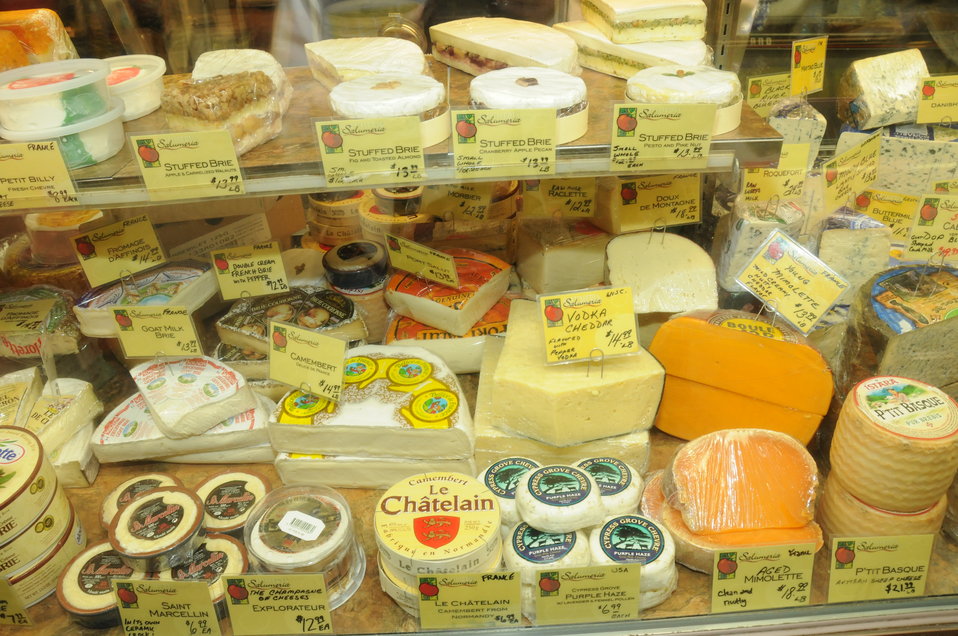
The Reading Terminal Market offers produce fresh from the field to the people of Philadelphia, PA on April 3, 2009. There are Amish specialties, fruits, vegetables, meats, seafood, and poultry. Reading Terminal Market opened for business in 1892 with approximately 78,000 square feet and almost 800 spaces for vendors. The Market was revitalized in the 1990’s and today is still the gastronomic bazaar that its original planners had envisioned. Many of the historic Market stands survived the reconstruction and are once again filled with local produce, fresh eggs, milk, meats, poultry, seafood, handmade crafts, jewelry, and clothing. The Market is home to more than 80 merchants, two of whom are descendants of the original stand holders from a century before.